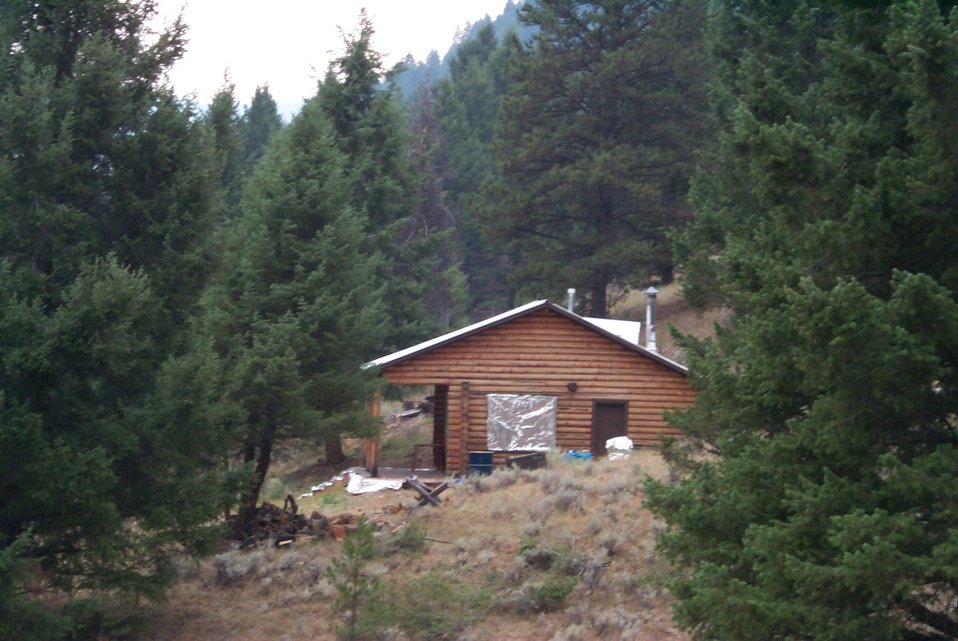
Fire retardant measures Urban interface Fire Clearwater Fire Salmon Field Office USRD Upper Snake River District